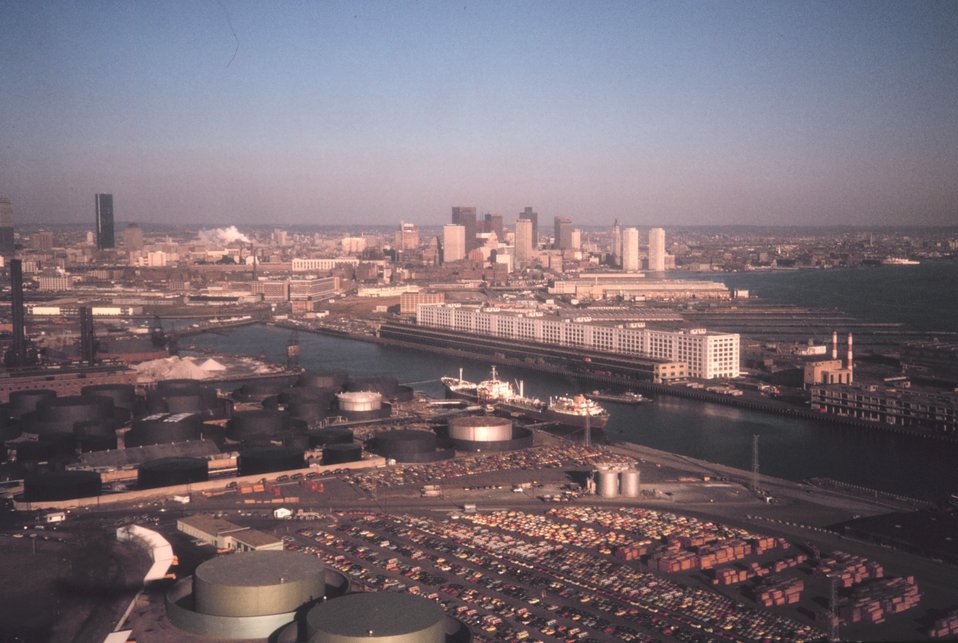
A view over the tanker piers of downtown Boston